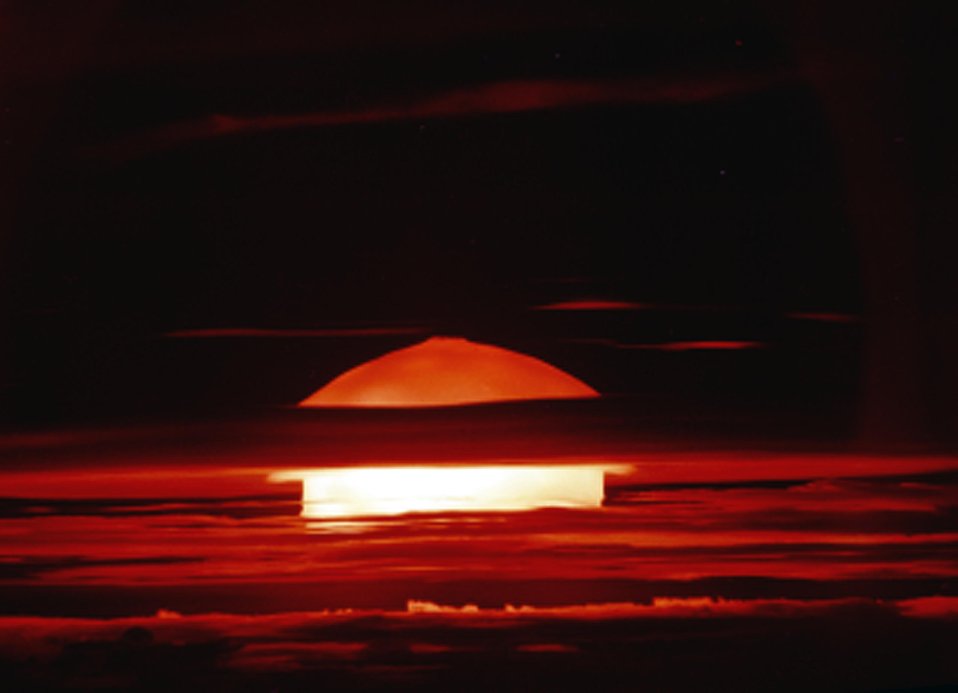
Bikini Atoll